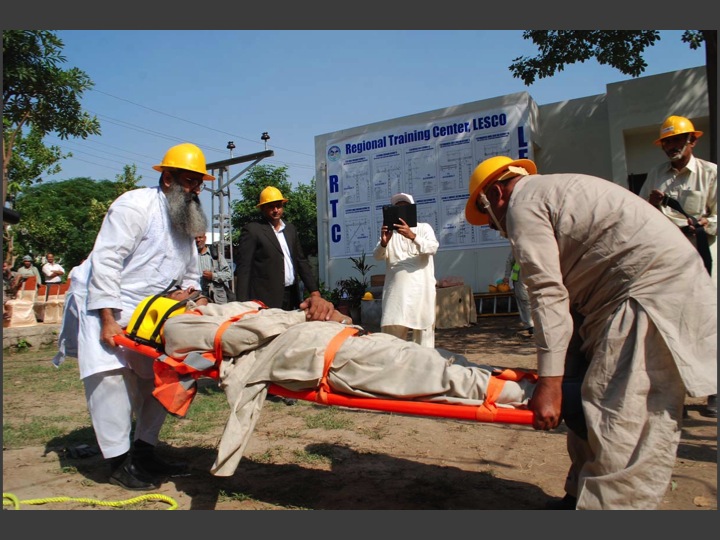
Linemen demonstrating the skills and techniques learnt from training3